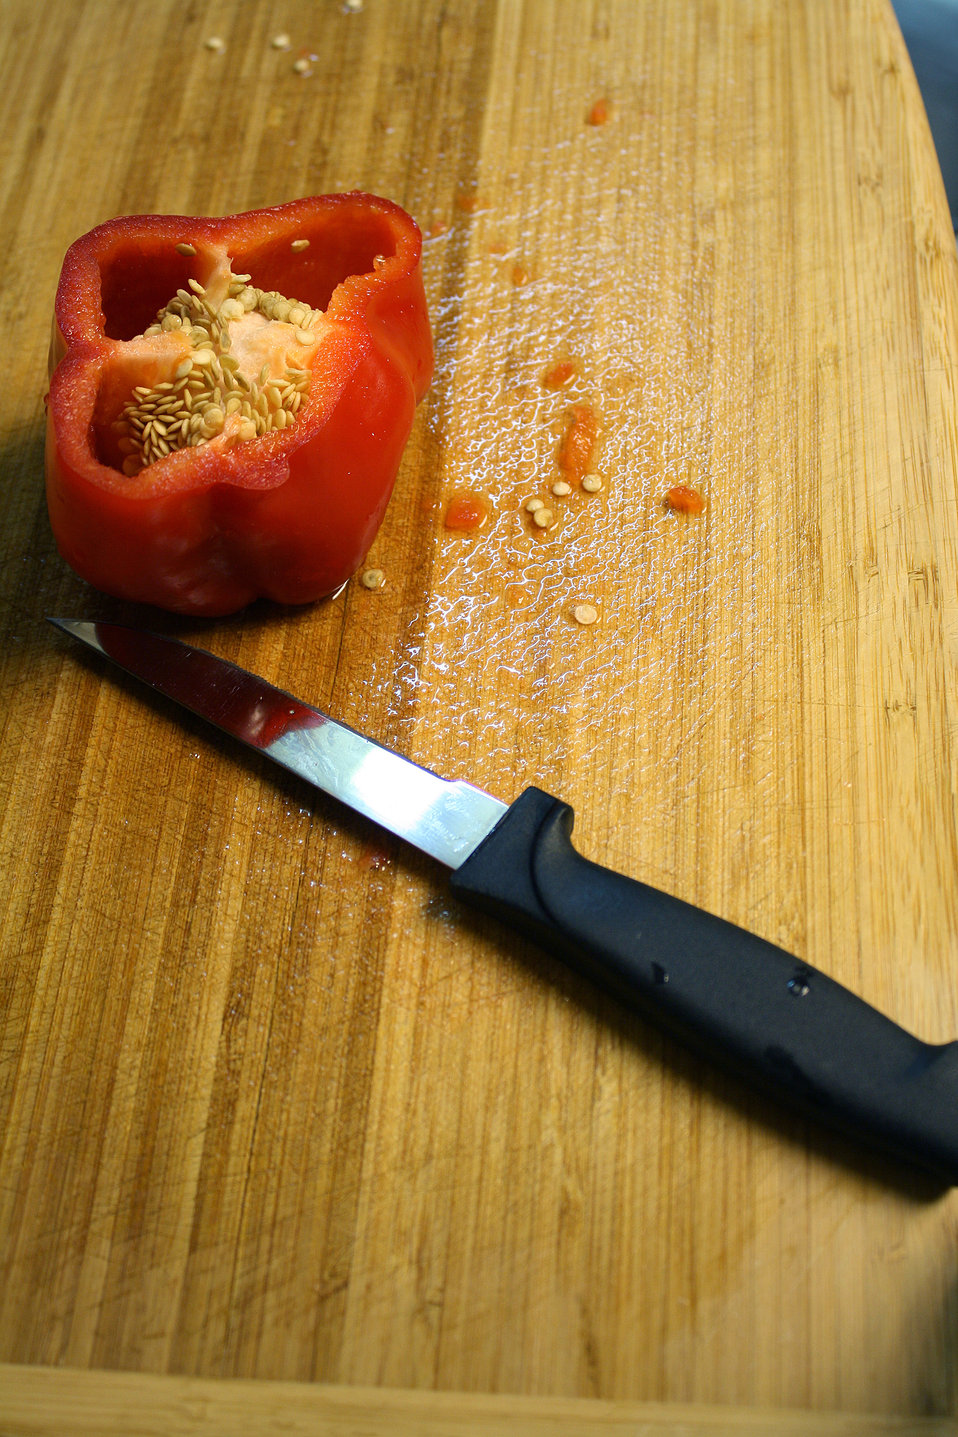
This picture was taken inside a home kitchen, and depicts a halved red bell pepper, Capsicum annuum, set atop a clean, well-worn cutting board. The pepper's core had been exposed revealing numerous heart-shaped seeds, as well as its bright red flesh. Before being cut, this pepper was thoroughly washed with soap, and warm water, removing debris, and surface contaminants.